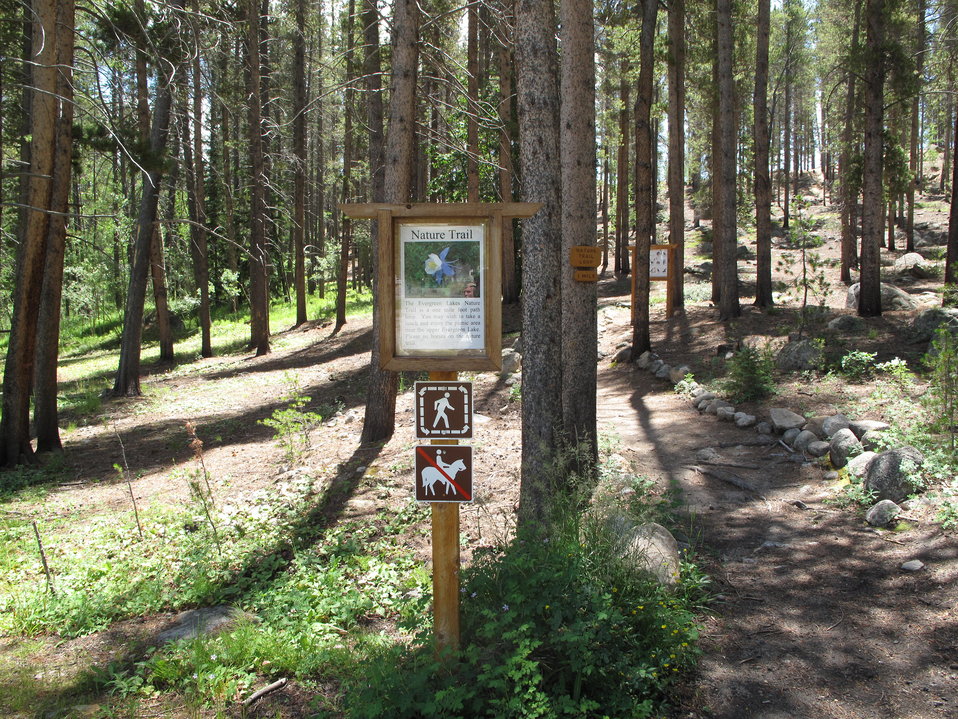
Leadville National Fish Hatchery

Trailhead.